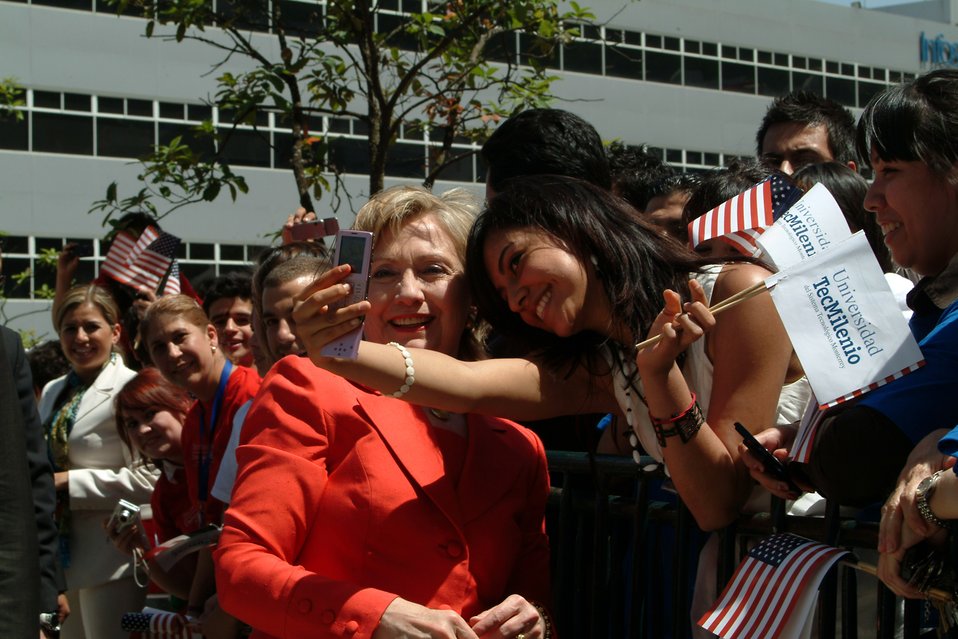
Secretary Clinton at TecMilenio University

U.S. Secretary of State Hillary Rodham Clinton greets students upon arrival at Tecmilenio University in Monterrey, Mexico March 26, 2009.